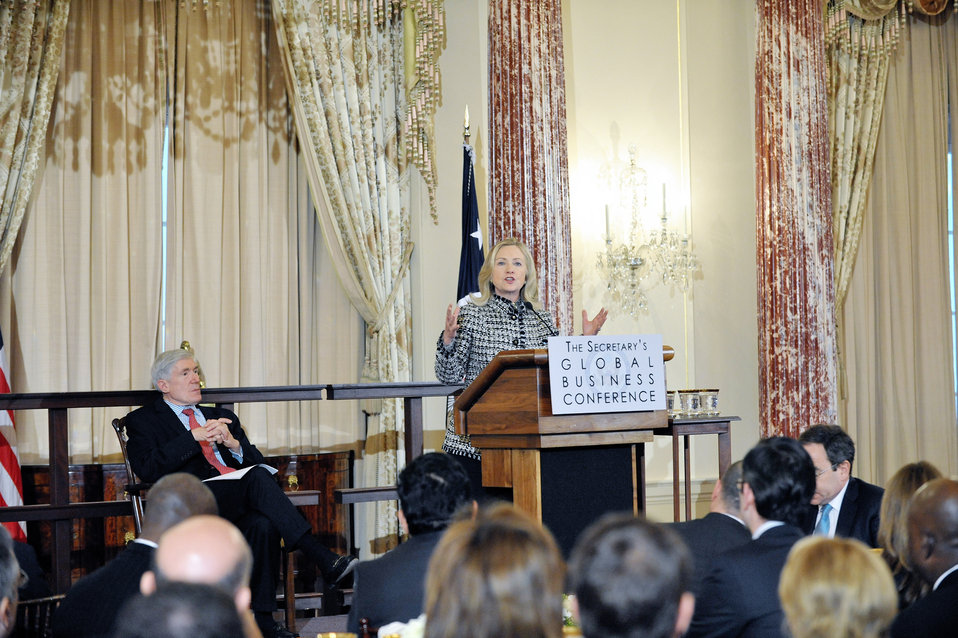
Secretary Clinton Delivers Remarks

U.S. Secretary of State Hillary Rodham Clinton delivers remarks at the first-ever State Department Global Business Conference at the U.S. Department of State in Washington, D.C., on February 21, 2012. Also pictured: Under Secretary of State for Economic Growth, Energy, and the Environment Robert Hormats.